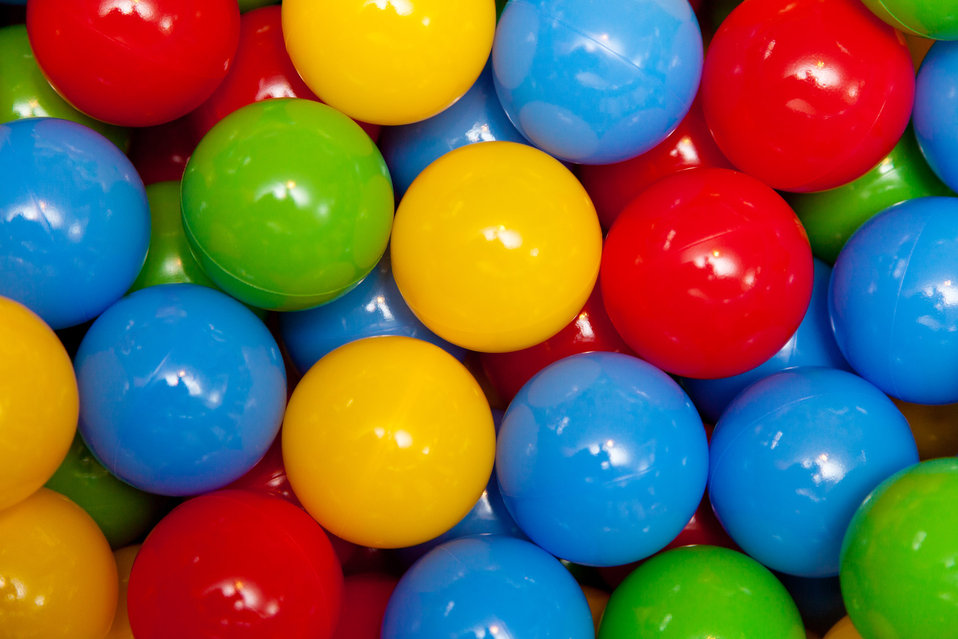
Play balls

Colorful play balls.